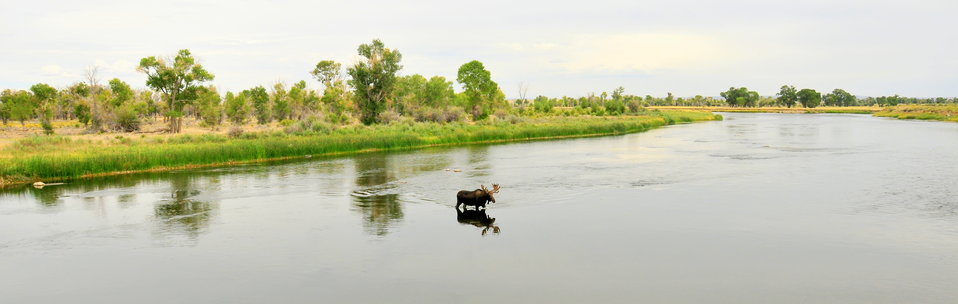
Bull Moose Crossing Green River on Seedskadee NWR 2